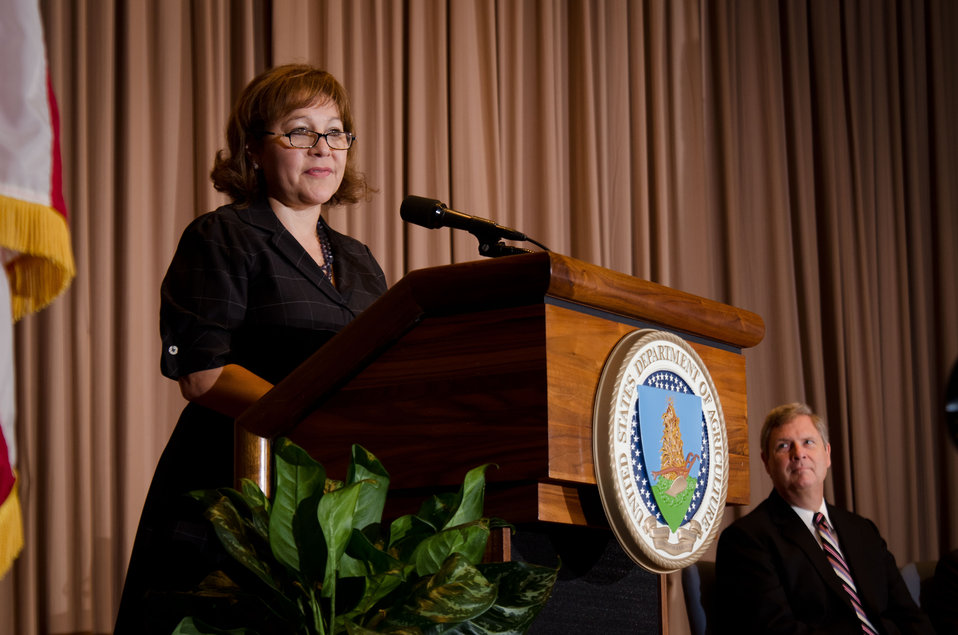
Tammye Trevino, the Administrator of USDA Rural Development’s Housing and Community Facilities programs (left) introduced Agriculture Secretary Tom Vilsack (right) during the National Hispanic Heritage Month observance at the United States Department of Agriculture's (USDA) Jefferson Auditorium in Washington, D.C. on Thursday, September 15, 2011.